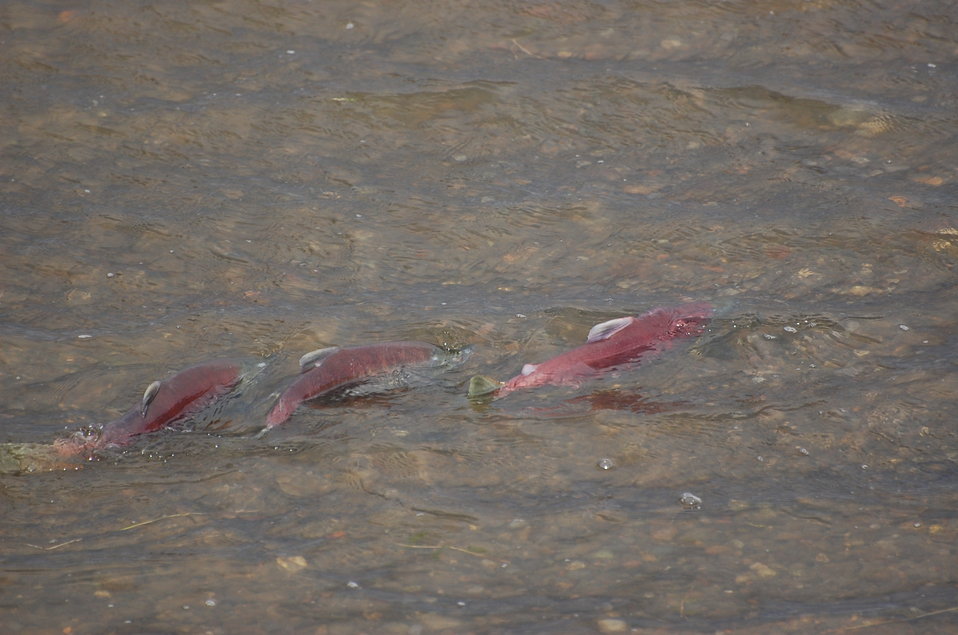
Sockeye salmon in Bluebill Lake

Izembek National Wildlife Refuge